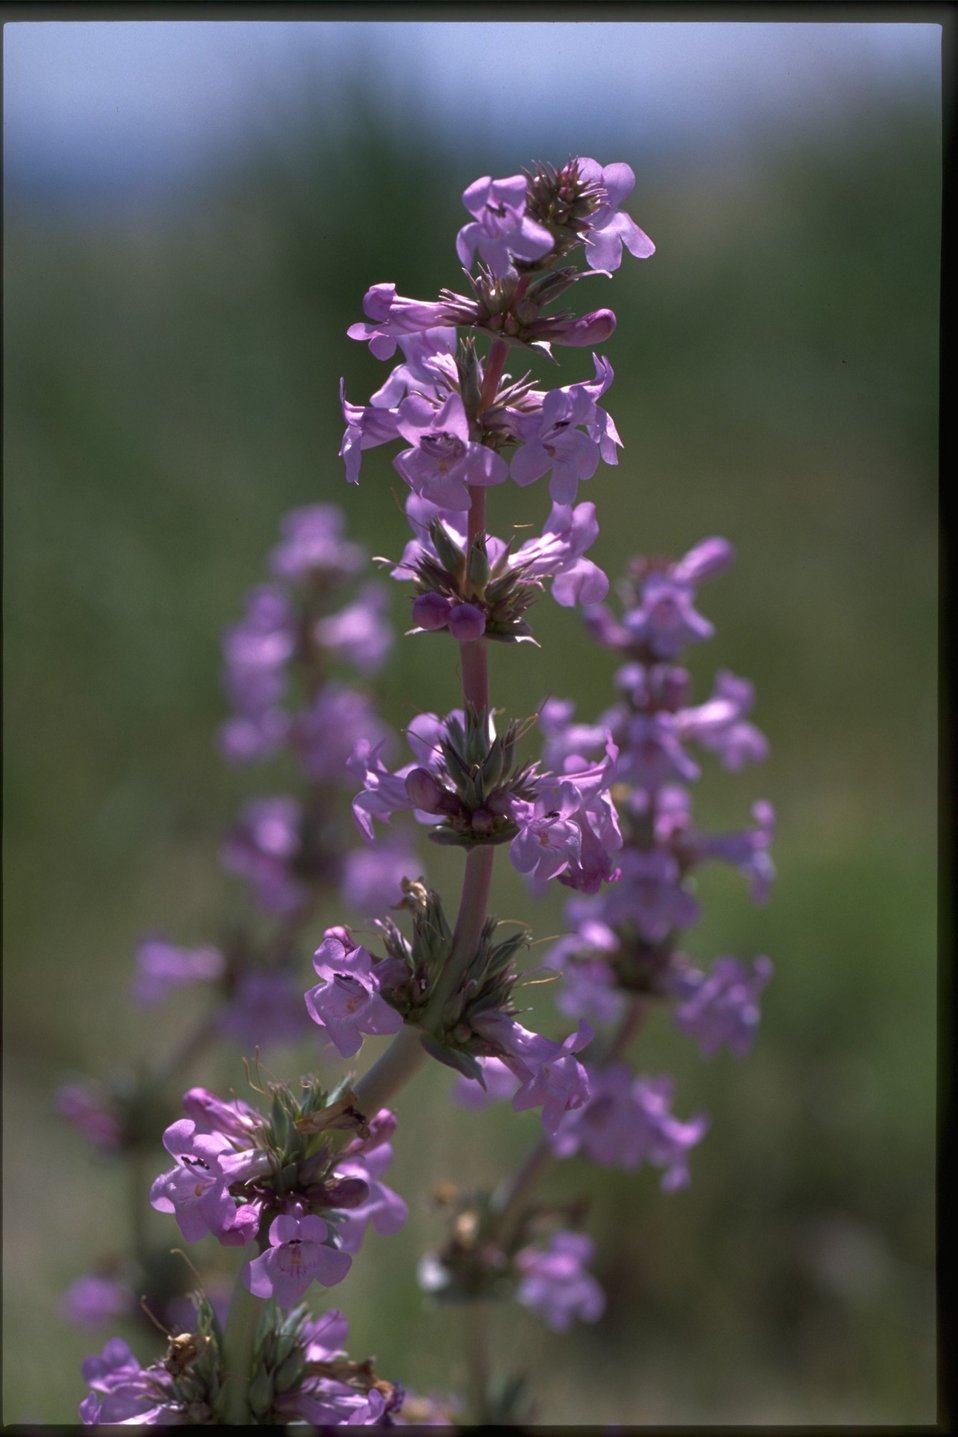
Closeup of Lamiaceae.